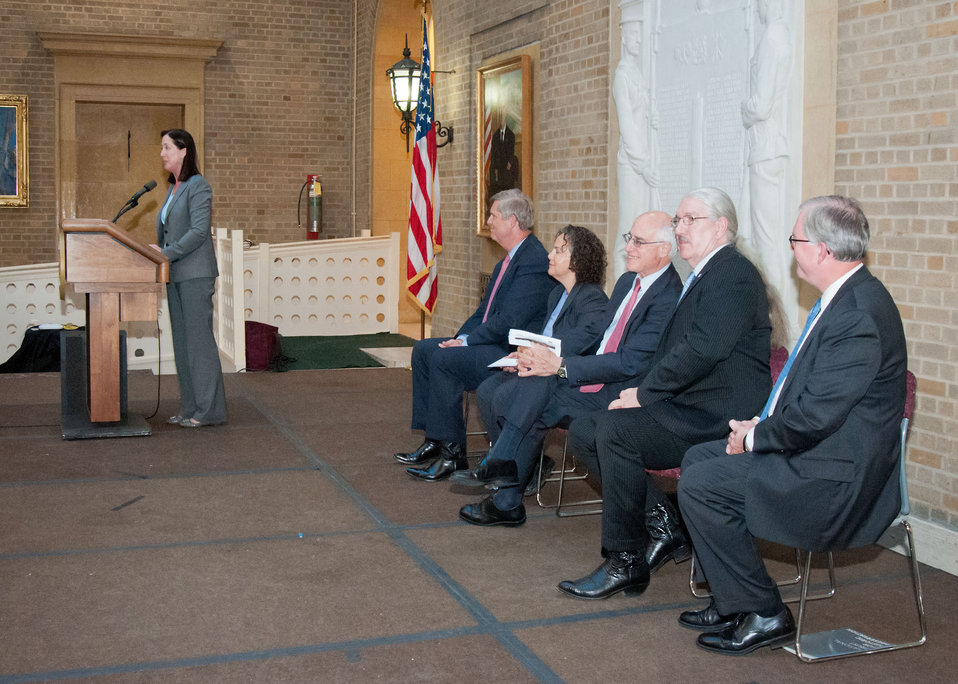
From left: Mary Wagner, Associate Chief, U.S. Forest Service, Agriculture Secretary Tom Vilsack, Nancy Sutley, Chair of the White House Council on Environmental Quality, Harris Sherman, Under Secretary, Natural Resources and Environment, Butch Blazer, Deputy Under Secretary, Natural Resources and Environment and David Brown, Executive Vice President, National Trust for Historic Preservation. Associate Chief Wagner introduced the speakers at the Chimney Rock National Monument Dedication Celebration held at the United States Department of Agriculture in Washington, D.C., on Monday, Sept. 24, 2012. President Barack Obama designated Chimney Rock in the San Juan National Forest in Southwest Colorado as a national monument on Friday, Sept. 21, 2012. A move that will help preserve 4,726 acres in southwestern Colorado surrounded by the Southern Ute Indian Reservation. The land will be managed by the U.S. Department of Agriculture Forest Service with assistance from local tribes. The site is deeply spiritual to the Pueblo people and other tribes. Chimney Rock was home to the Pueblo People 1,000 years ago and is culturally significant for Native American tribes.